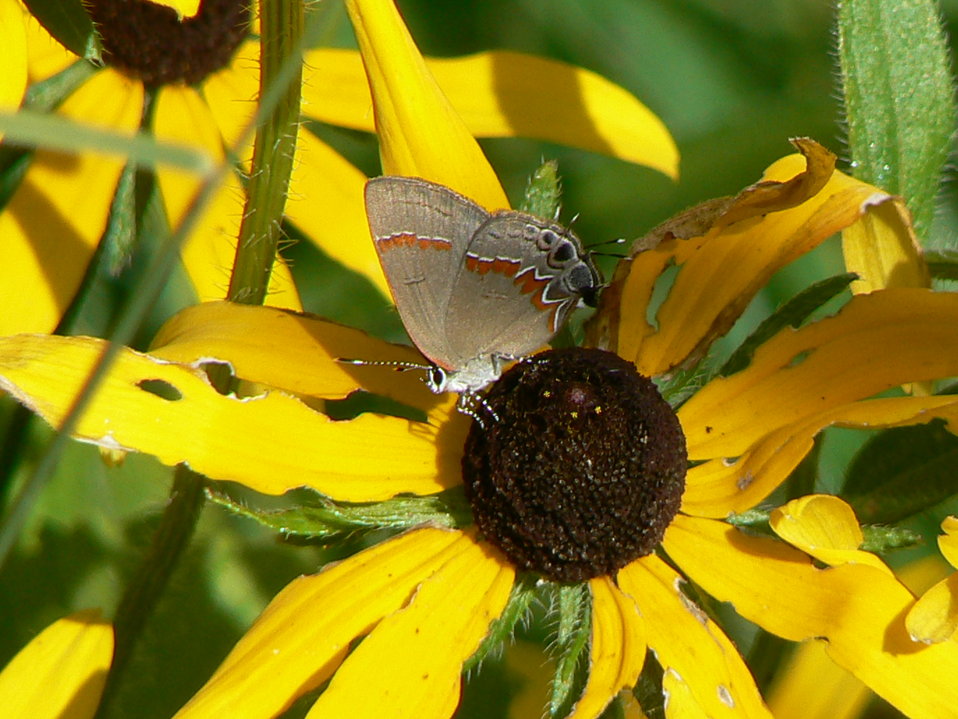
Red-banded hairstreak at Cape May National Wildlife Refuge.